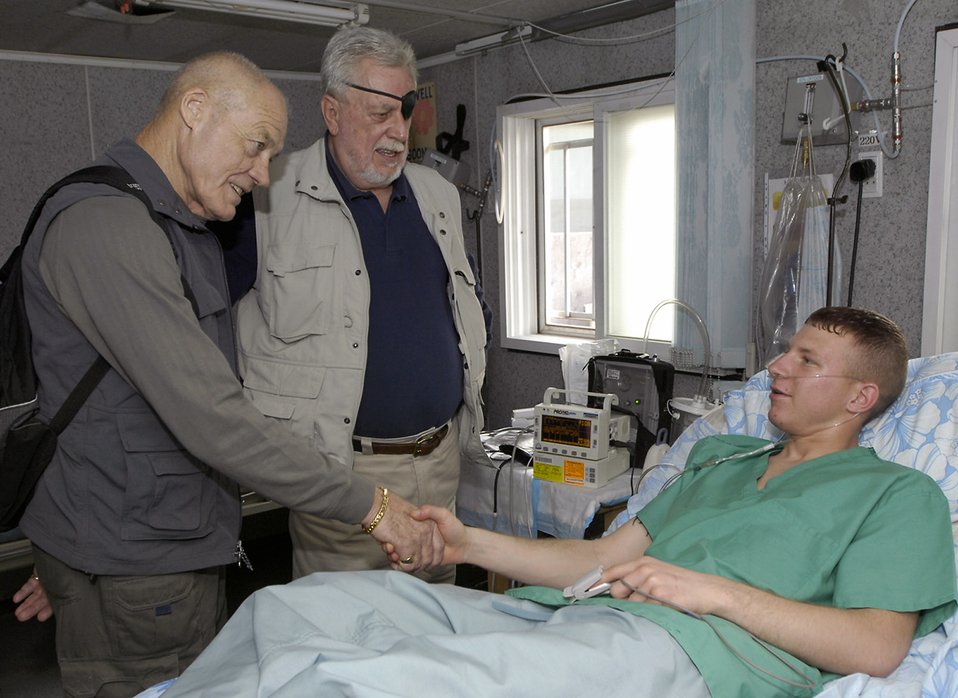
Medal of Honor recipients visit Manas Air Base

Medal of Honor recipients retired Army Col. Robert L. Howard and retired Marine Capt. John J. McGinty III visit Army Private Andrew Knar March 15 at the hospital at Manas Air Base, Kyrgyzstan. The Medal of Honor recipients spoke at several local engagements on their stop at Manas AB before touring other locations in the U.S. Air Forces Central area of responsibility. Both received their medals from actions taken during the Vietnam War.